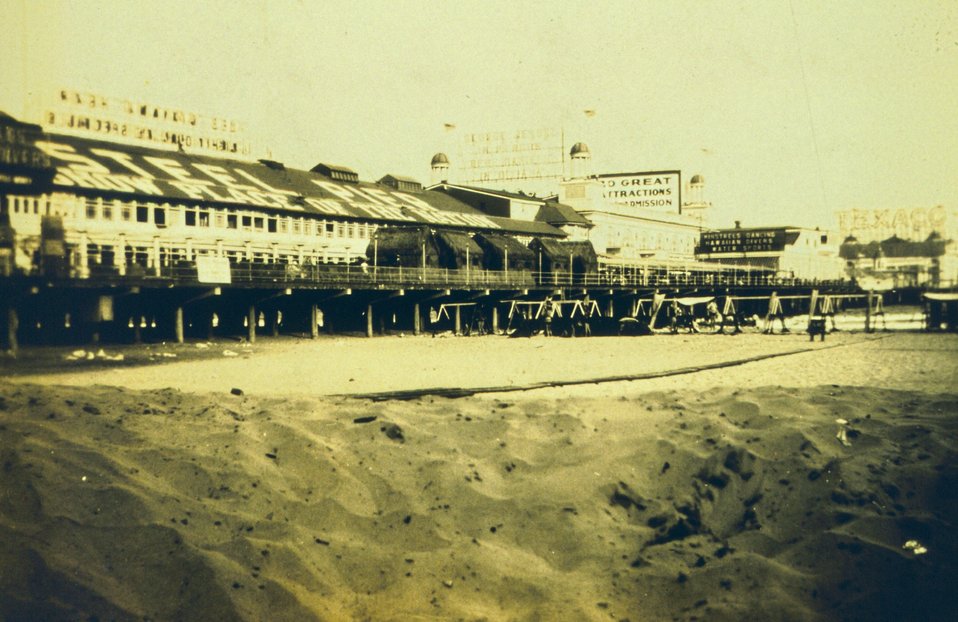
The steel pier at Atlantic City, 'Show Place of the Nation.'